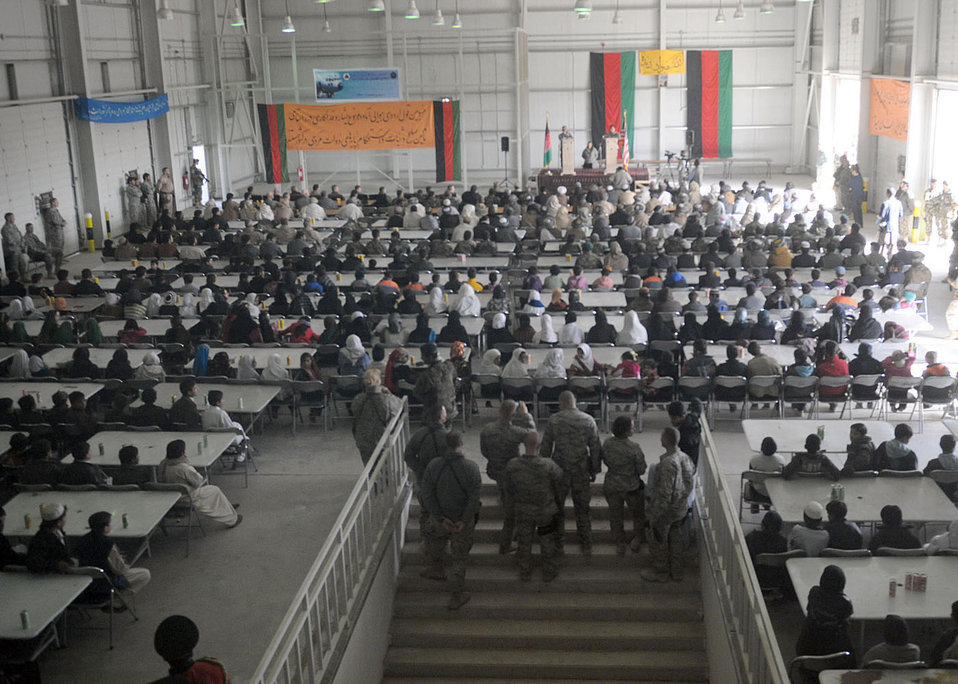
New Afghan facilities key for Kandahar Air Wing

Hundreds of coalition forces, tribal elders and school children attend the Kandahar Air Wing open house Jan. 1, 2011, at Kandahar Airfield, Afghanistan. The open house showcased the newly constructed facilities and the Afghan and coalition aircraft inventory. The Kandahar AW, one of three air wings in Afghanistan, is an Afghan-led air power for support operations within the Afghan National Security Forces.